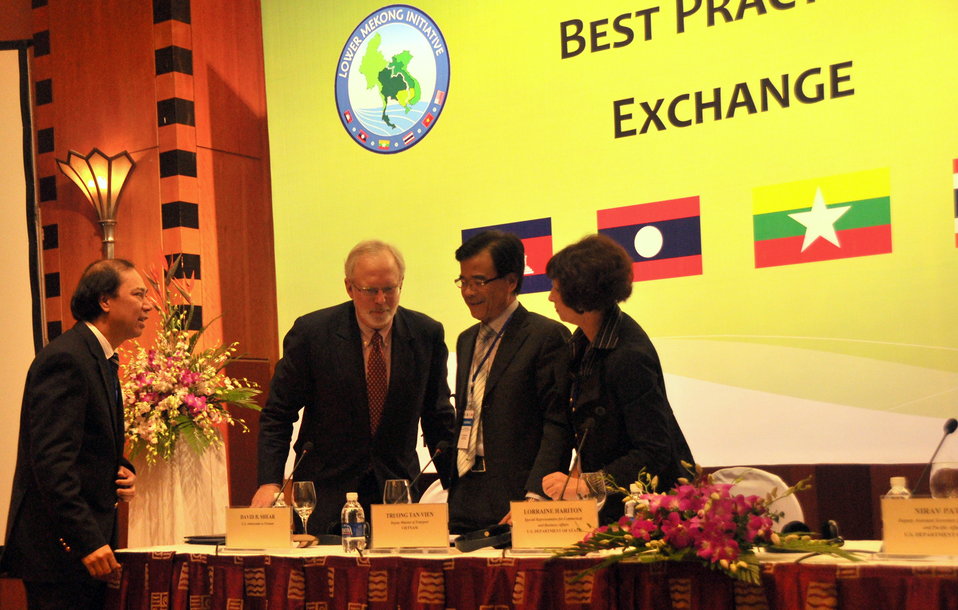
U.S. Ambassador David B. Shear, second from left, and other delegates at the Lower Mekong Initiative Infrastructure Best Practices Exchange in Hanoi

Hanoi: January 14, 2013